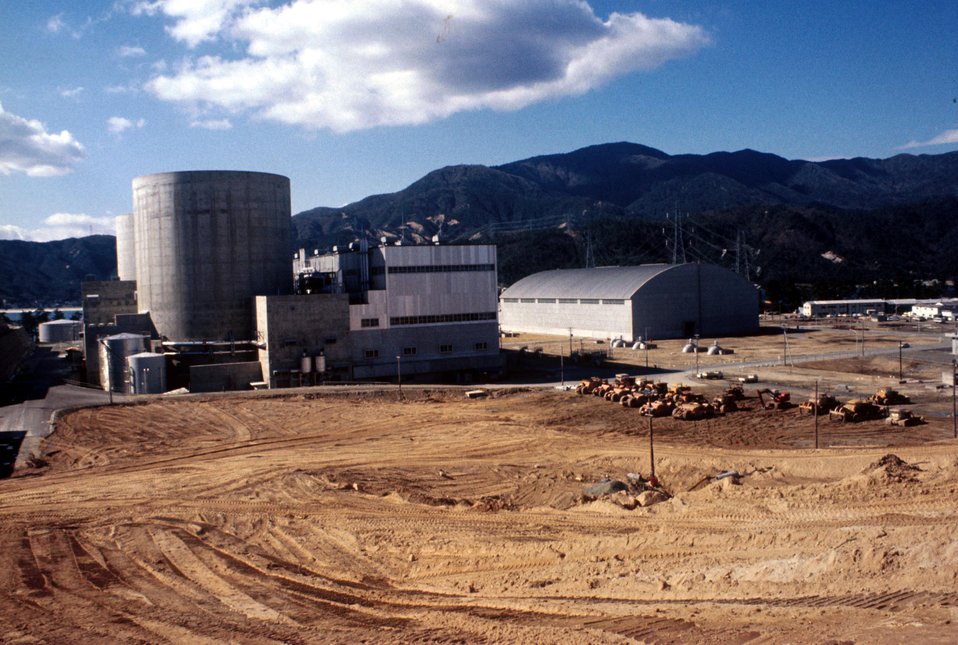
Kansai Plant #1, Mihama, Japan. Kansai Nuclear Reactor.